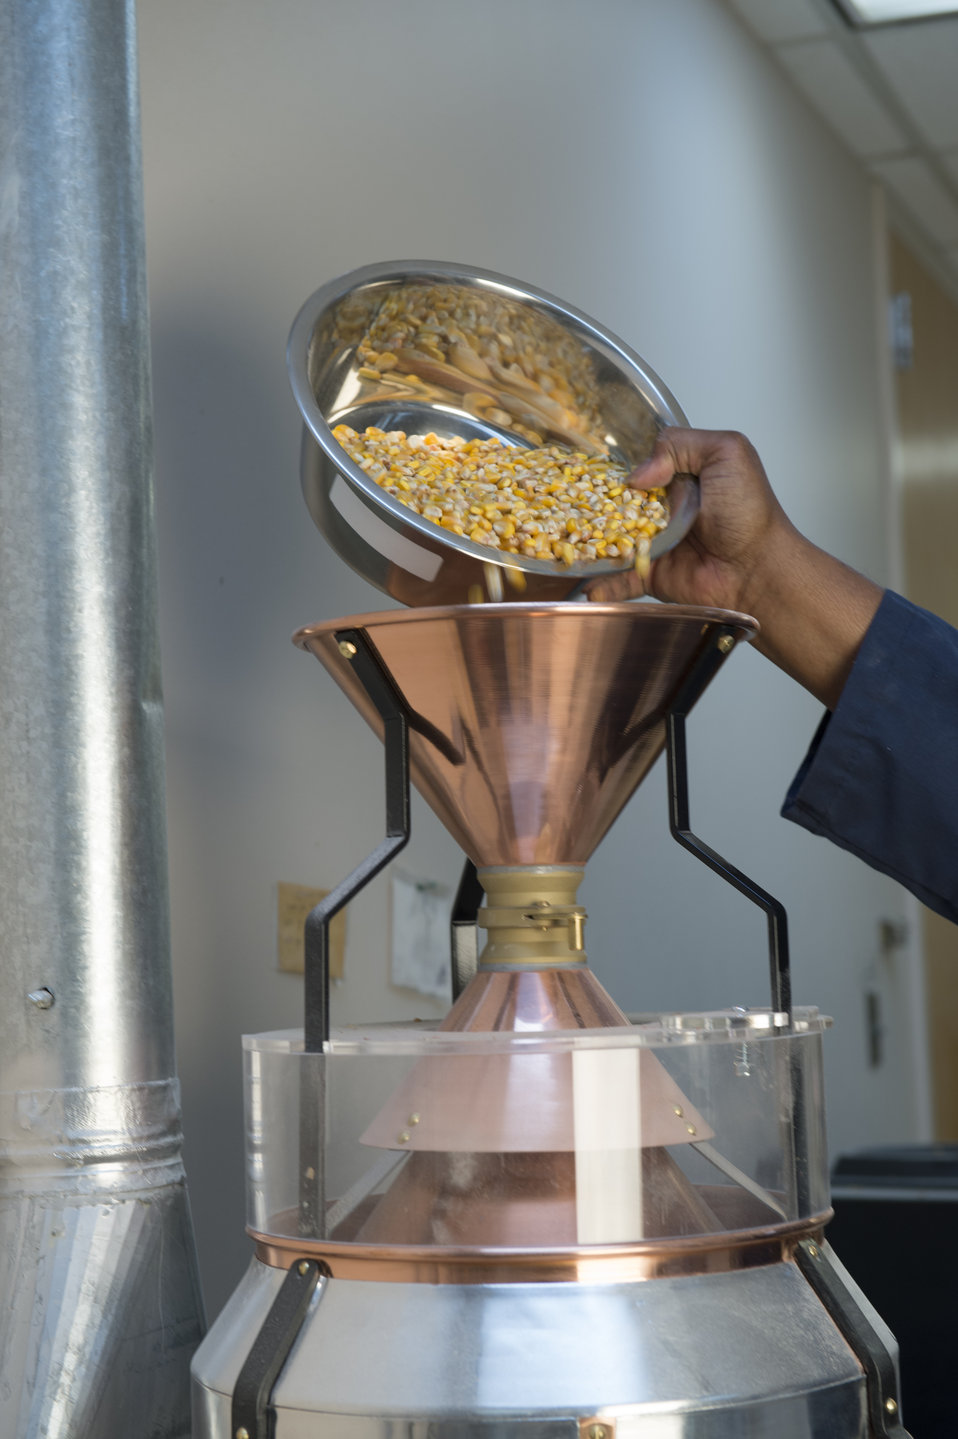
A U.S. Department of Agriculture (USDA) Grain Inspection, Packers and Stockyards Administration (GIPSA) Federal Grain Inspection Service (FGIS) scientist tests corn at the FGIS inspection laboratory in New Orleans, LA on Monday, Nov. 18, 2013.